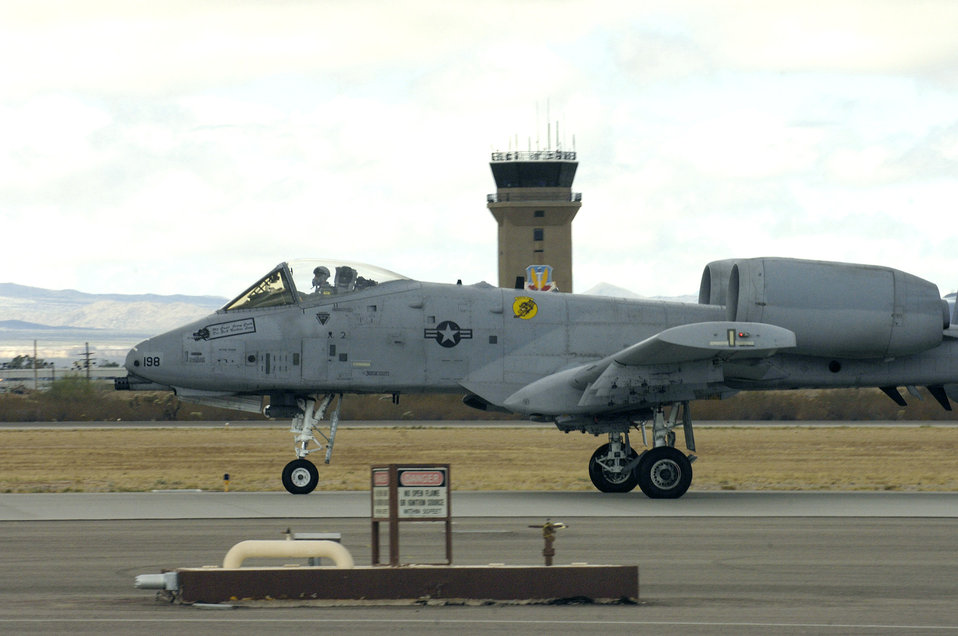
Ready for takeoff

Maj. Vernie Pendley taxis to the runway before taking off in his A-10 Thunderbolt II on Wednesday, April 05, 2006, during exercise Bushwhacker 06-02 at Davis-Monthan Air Force Base, Ariz. Bushwhacker 06-02 is a Phase I and Phase II exercise demonstrating the 355th Wing's ability to prepare to deploy and fight when called. Major Pendley is with the 354th Fighter Squadron.